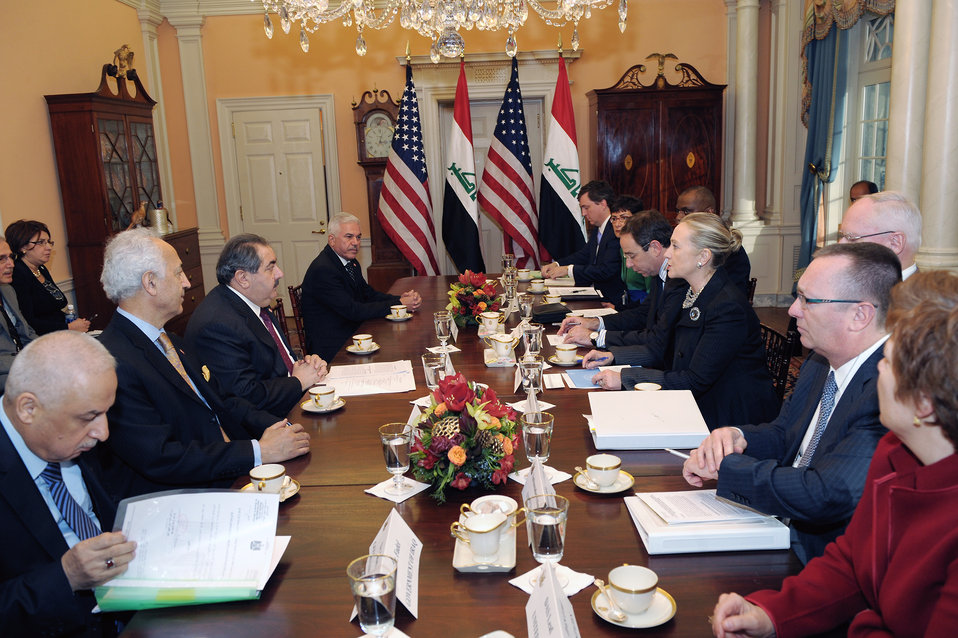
Secretary Clinton and Iraqi Foreign Minister Zebari Launch the Joint Coordination Committee

U.S. Secretary of State Hillary Rodham Clinton launches the Joint Coordination Committee (JCC) with Iraqi Foreign Minister Hoshyar Zebari, at the U.S. Department of State in Washington, D.C., on December 12, 2011. Deputy Secretary of State Thomas Nides is seated to the right of Secretary Clinton.